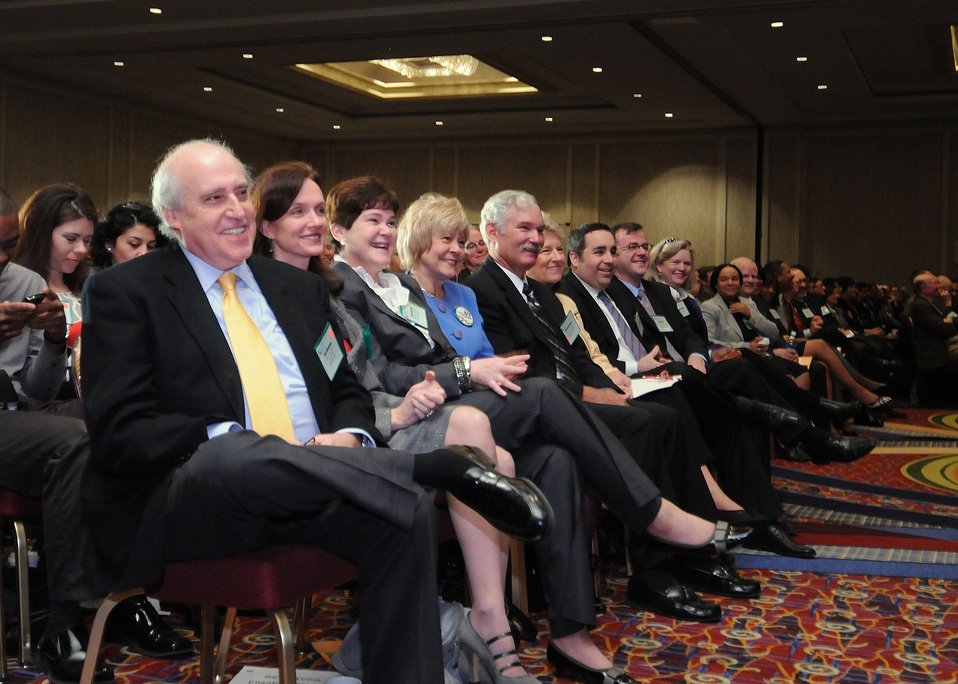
Former Agriculture Secretary Dan Glickman was part of the audience at World Agriculture Outlook Board Forum held in Arlington, VA, on Thursday, February 24, 2011.